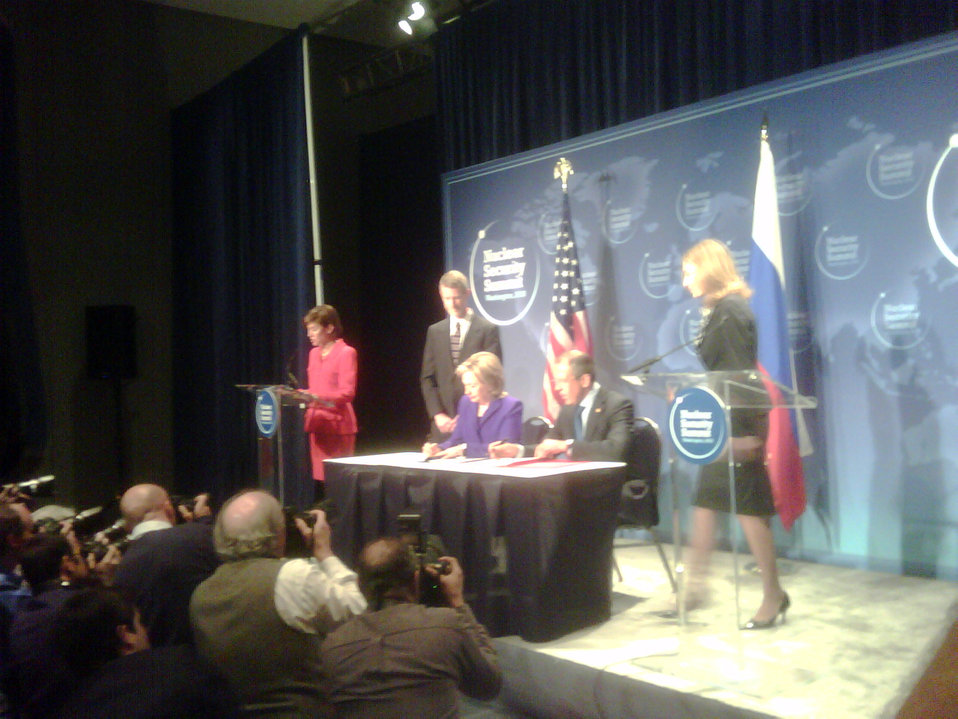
Secretary Clinton Signs Plutonium Disposition Protocol With Russian Foreign Minister

U.S. Secretary of State Hillary Rodham Clinton signs the Plutonium Disposition Protocol With Russian Foreign Minister Sergey Lavrov during the Nuclear Security Summit at the Washington Convention Center in Washington, DC April 13, 2010.